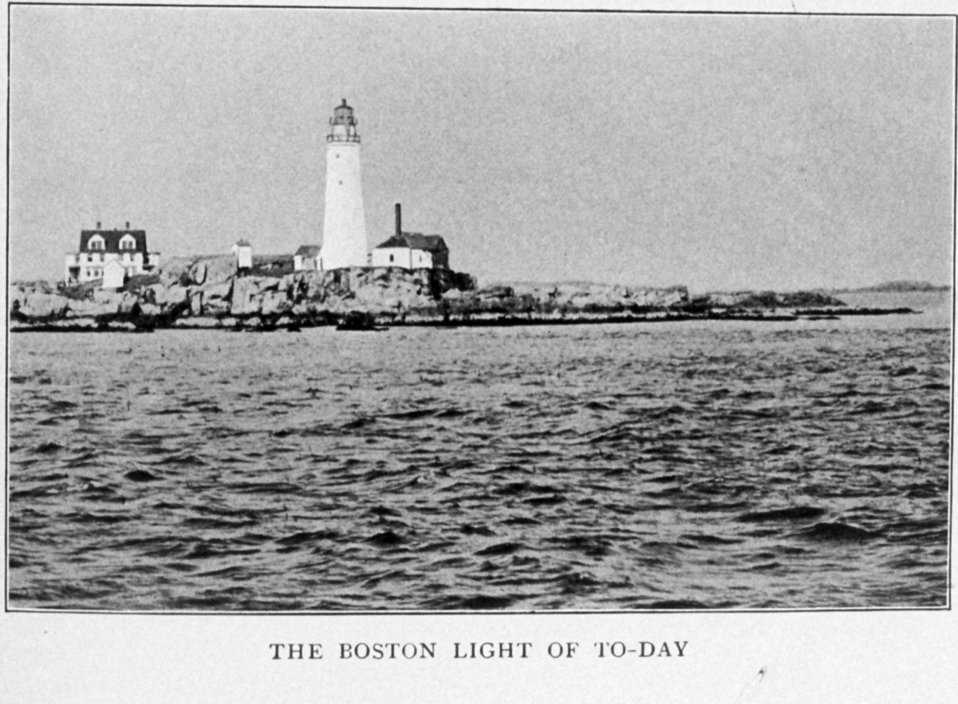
The Boston Light of Today (1917). In: 'Lighthouses and Lightships of the United States' by George R. Putnam, p. 6, 1917. Houghton Mifflin and Company, Boston. Library Call No. 527.7 P98.